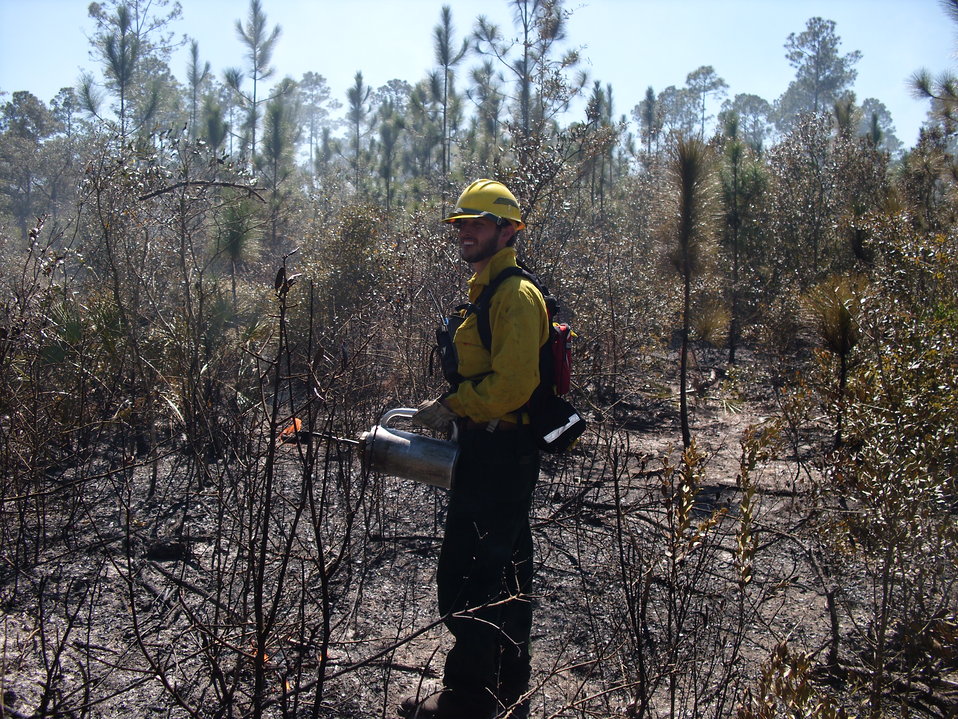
UFSAFE5

University of Florida Masters candidate Scott Rothberg of the Student Association for Fire Ecology (SAFE) at a prescribed burn on Lower Suwannee NWR